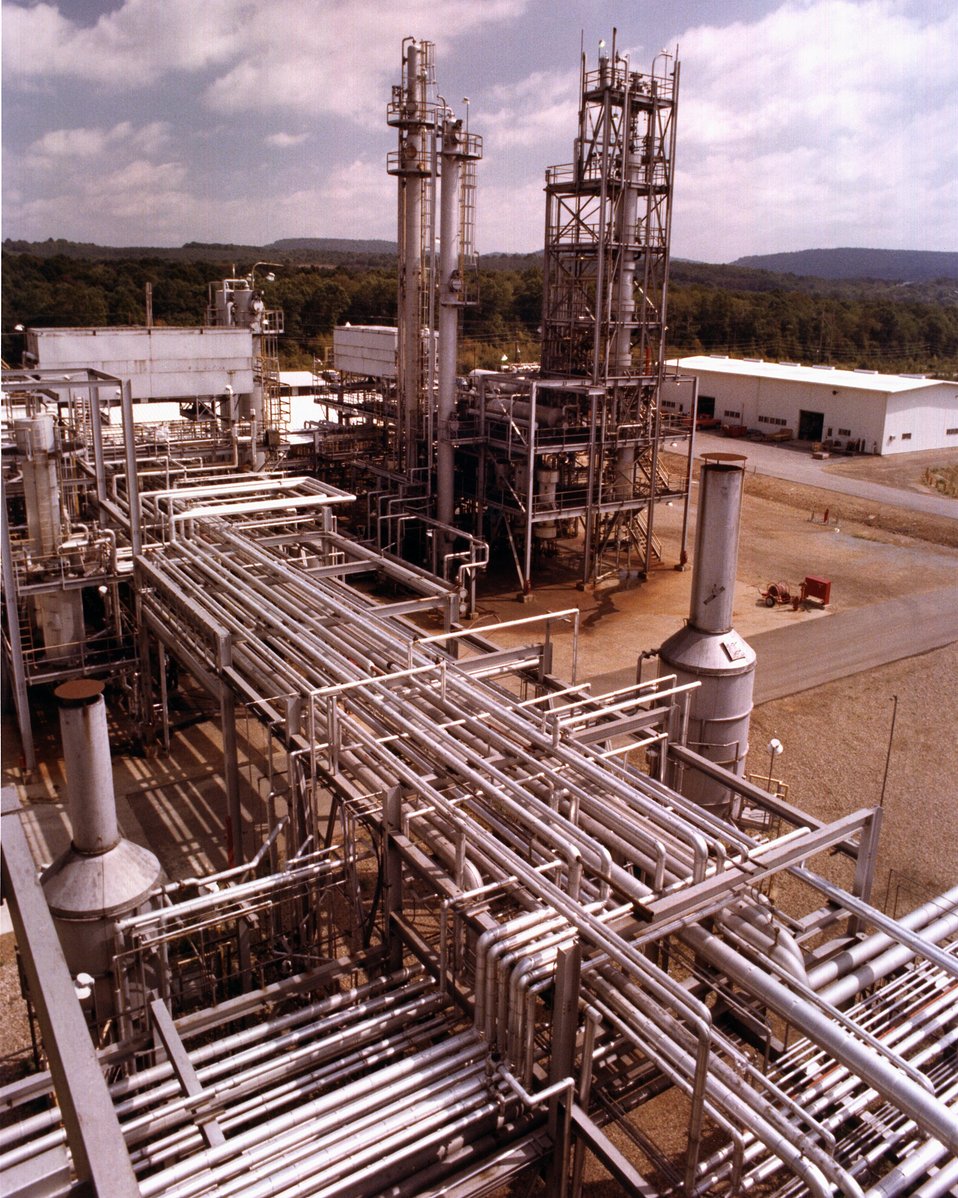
THE BIGAS PLANT CAN PROCESS 120 TONS OF COAL PER DAY.

THE BIGAS PILOT PLANT HAS A TWO-STAGE, ENTRAINED-BED GAS- IFIER. IN THIS GASIFIER, PULVERIZED COAL IS CONVERTED TO METHANE-RICH GAS BY REACTING THE COAL WITH STEAM AND OXYGEN UNDER HIGH PRESSURE. THE METHANE-RICH GAS IS PROCESSED TO REMOVE THE HYDROGEN SULFIDE AND CARBON DIOXIDE WHICH LEAVES THE HIGH BTU GAS. THE BIGAS REACTOR CAN HANDLE ALL TYPES OF COAL. DUE TO THE HIGH OPERATING TEMPERATURE OF OVER 2500 DEGREES F., THERE IS NO TAR IN THE PRODUCT GAS, THUS SIMPLIFYING THE GAS CLEANUP STEP. HIGH METHANE YIELDS ARE ACHIEVED WITHOUT METHANATION, AND COALS CAN BE GASIFIED WITHOUT PRIOR TREATMENT BECAUSE THE PROCESS USES AN ENTERTAINED-BED RATHER THAN A FIXED-BED OR FLUIDIZED-BED SYSTEM.